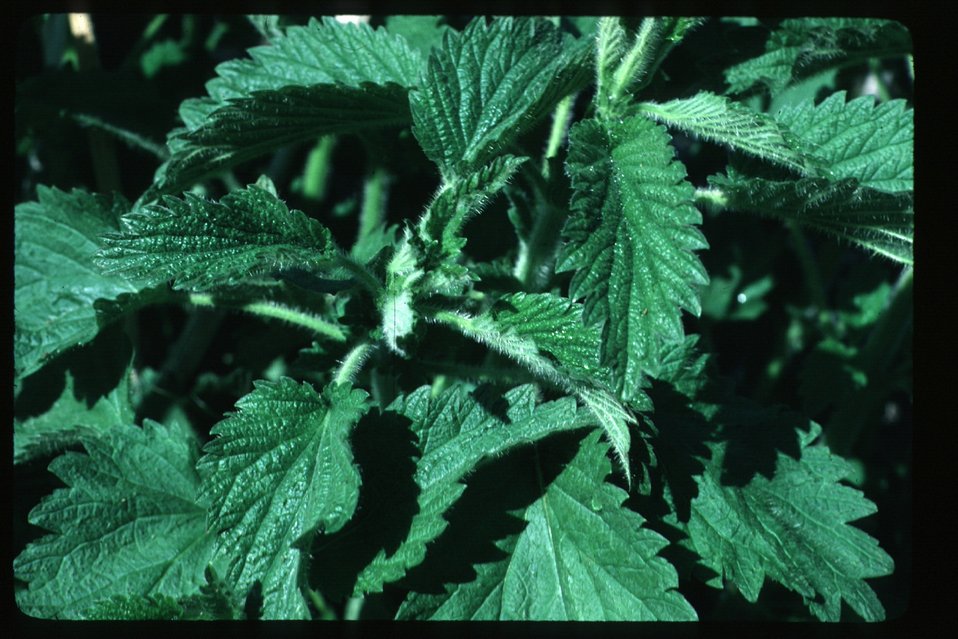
Nettle Urtica dioica Brush, grasses Wildflowers